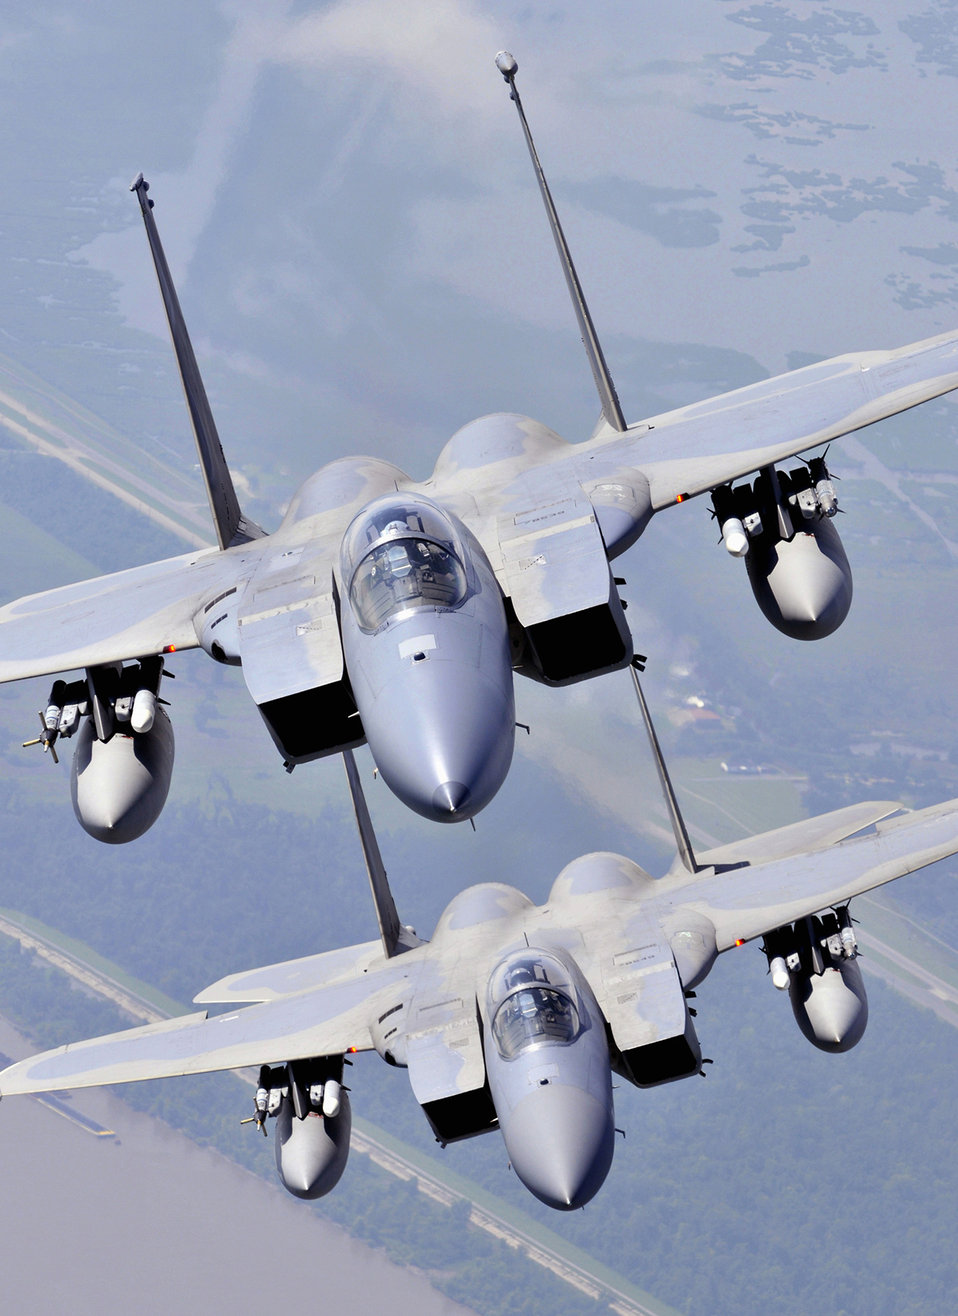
Double trouble

F-15 Eagles assigned to the Louisiana Air National Guard's 159th Fighter Wing fly over southern Louisiana wetlands July 11 during an exercise. The unit is stationed on Naval Air Station Joint Reserve Base, New Orleans.